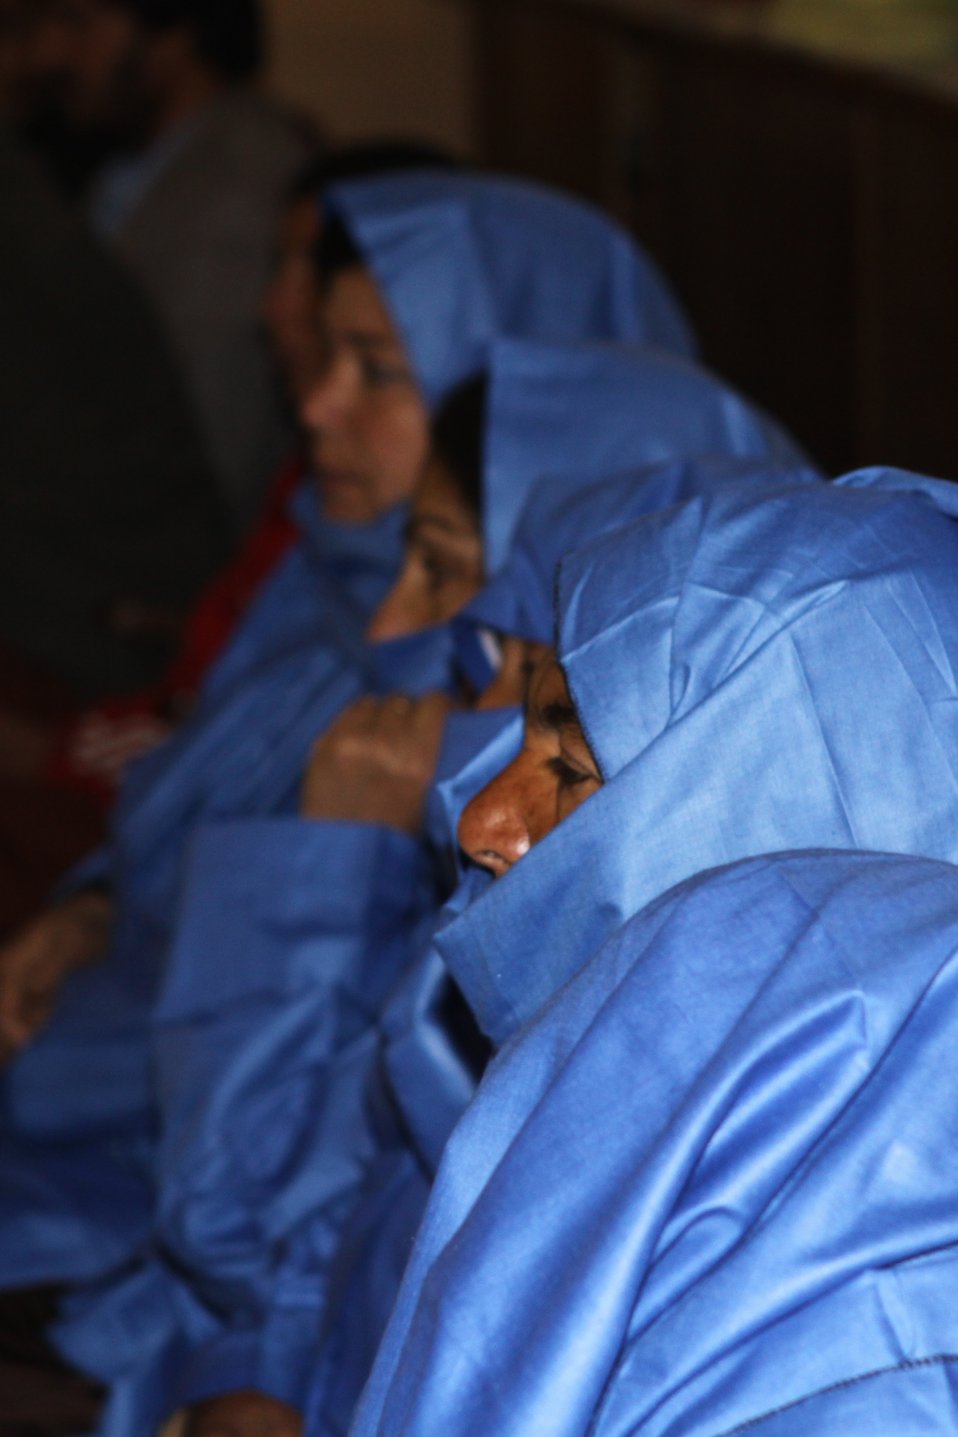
Community Health Workers Celebrated

Kabul, Afghanistan | December 5, 2010 — In support of the United Nations designated International Volunteer Day for Economic and Social Development, Afghanistan’s Ministry of Public Health celebrated its annual Community Health Worker Day today. Acting Minister of Public Health Dr. Suraya Dalil, USAID Senior Deputy Mission Director Robert Hellyer, other government officials, and international donors joined in recognizing the critical contribution of community health workers in Afghanistan and encouraging them to continue their voluntary support to their communities.
The event praised the contributions of the more than 22,000 volunteers throughout the country who deliver community level health-education, counseling, and services out of village health posts located in private homes. The Ministry of Public Health envisioned that community-based healthcare programs will actively encourage communities and families to adopt healthy lifestyles and behaviors, and provide families access to high quality and socially acceptable preventative medicine and life-saving services.
“We have 22,000 community health workers in Afghanistan that are able to implement the basic and standard medicines. They all have been trained through a job description,” said Minister Dalil. Addressing the health workers, she added, “I am proud and feel powerful that I have people like you.”
USAID-funded health projects collaborate closely with the Ministry of Public Health to improve the health and nutritional status of Afghans, provide quality primary healthcare, and promote healthy behaviors at the community and household-levels. USAID supported the training of more than 9,000 of the volunteer community health workers currently working in Afghanistan.
“On behalf of the American people, I congratulate the Community Health Workers for their diligence to gain the skills and knowledge necessary to serve their communities in this important role,” said USAID Senior Deputy Mission Director Hellyer. “USAID strongly supports community based health care and believes that quality community-based health services are essential to reaching Afghanistan’s Millennium Development Goals.”
To support the Basic Package of Health Services, USAID assisted in developing the community health worker training manual, helped train community health worker supervisors and master-trainers, facilitated in-service training, and produced and developed reporting tools, job aids, and education materials.